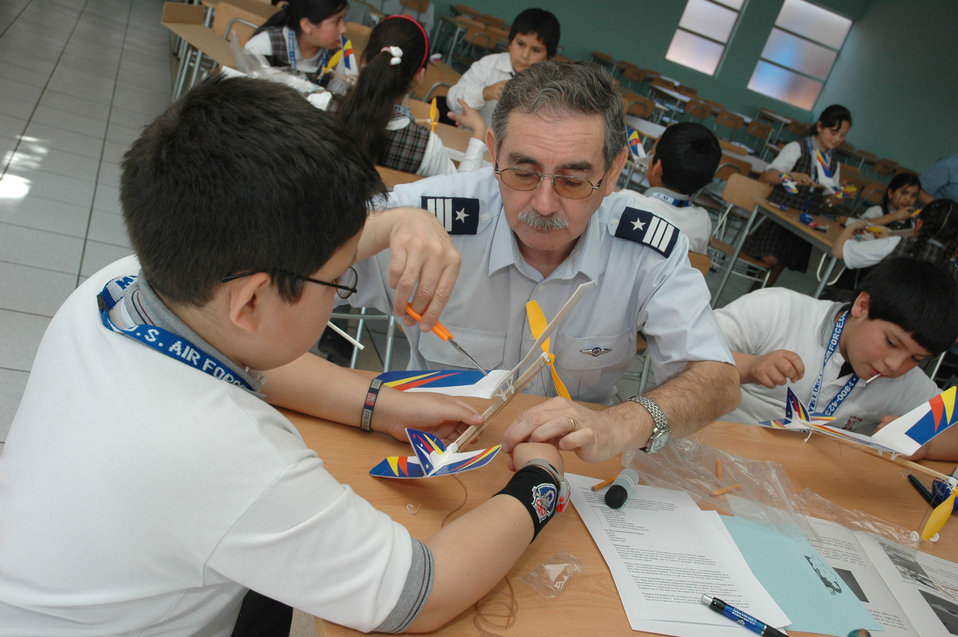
Airmen, Chilean school 'partner' to teach children aviation

A Chilean air force officer assists a group of students at the Complejo Educacional Esperanza School in Santiago, Chile, during a community outreach event on Oct. 27. The model airplane kits were donated by a Silicon Valley technology company for use with Operation Southern Partner, an Air Forces Southern-led exchange aimed at providing intensive, periodic subject matter exchanges with partner nations in the U.S. Southern Command area of focus. Included in the exchange is visits like this one where Airmen partnered with local U.S. Embassy volunteers, Chilean air force officers, members of the U.S. Military Group and volunteers from Agilent Technologies to teach children about the practical applications of the sciences.